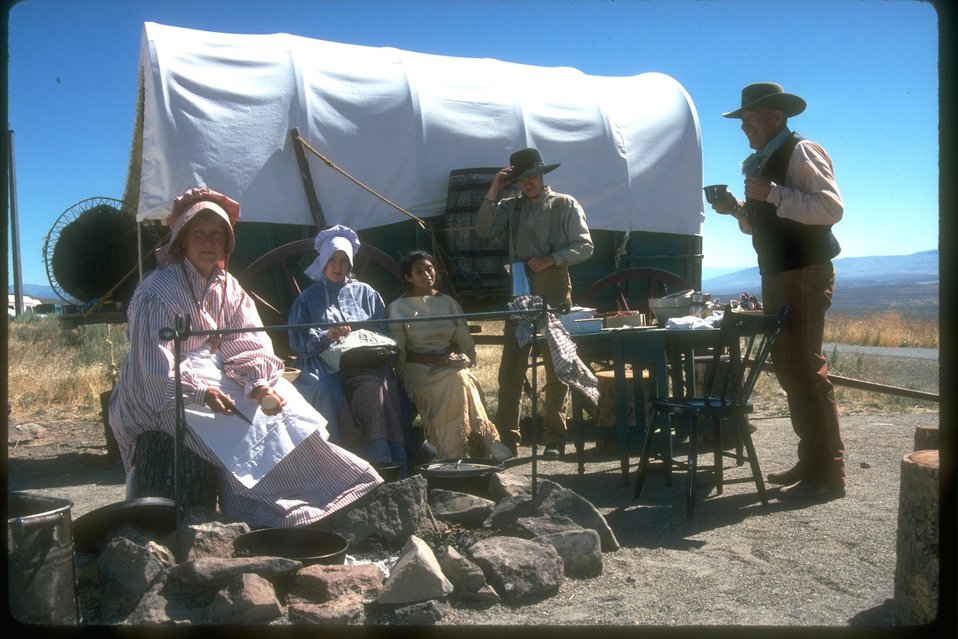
A presentation of living history with a pioneer family sitting outside of their covered wagon eating food at their dining table in the middle of the range land.